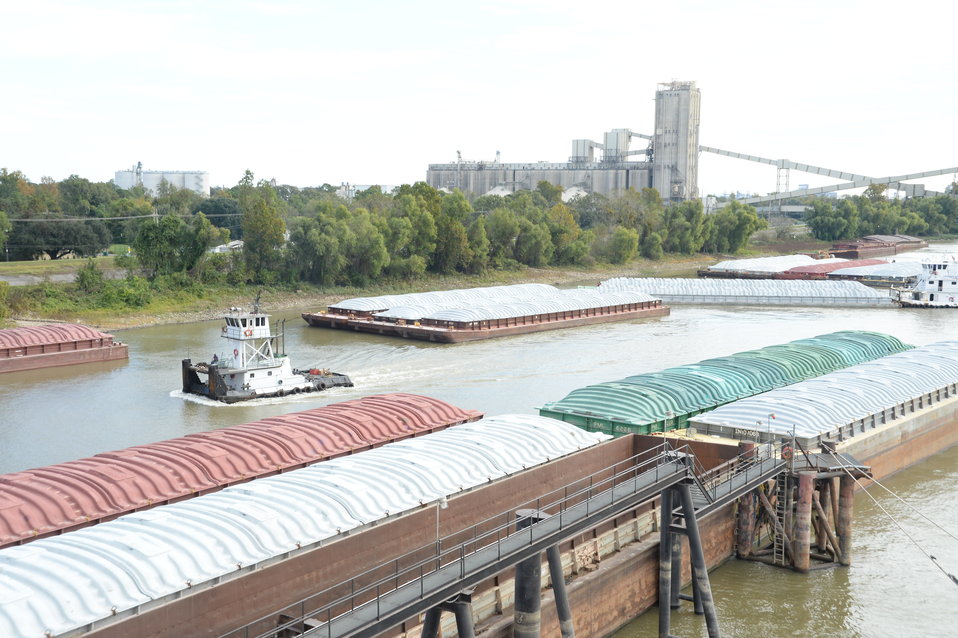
Barges are lined up waiting to transfer grain to storage facilities near the Port of New Orleans in New Orleans, LA on Tuesday, Nov. 19, 2013.